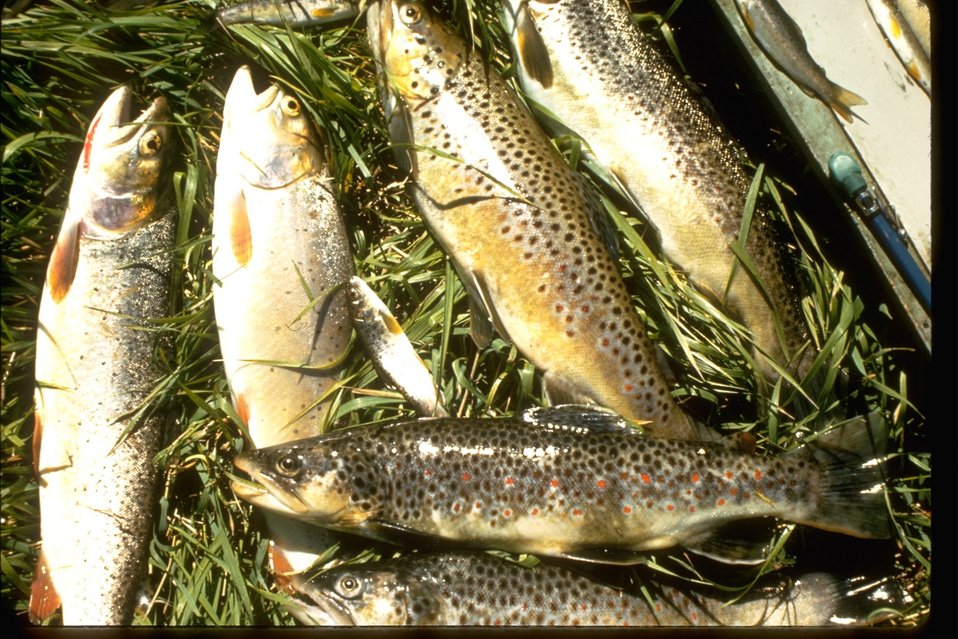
A fisherman's catch of trout.